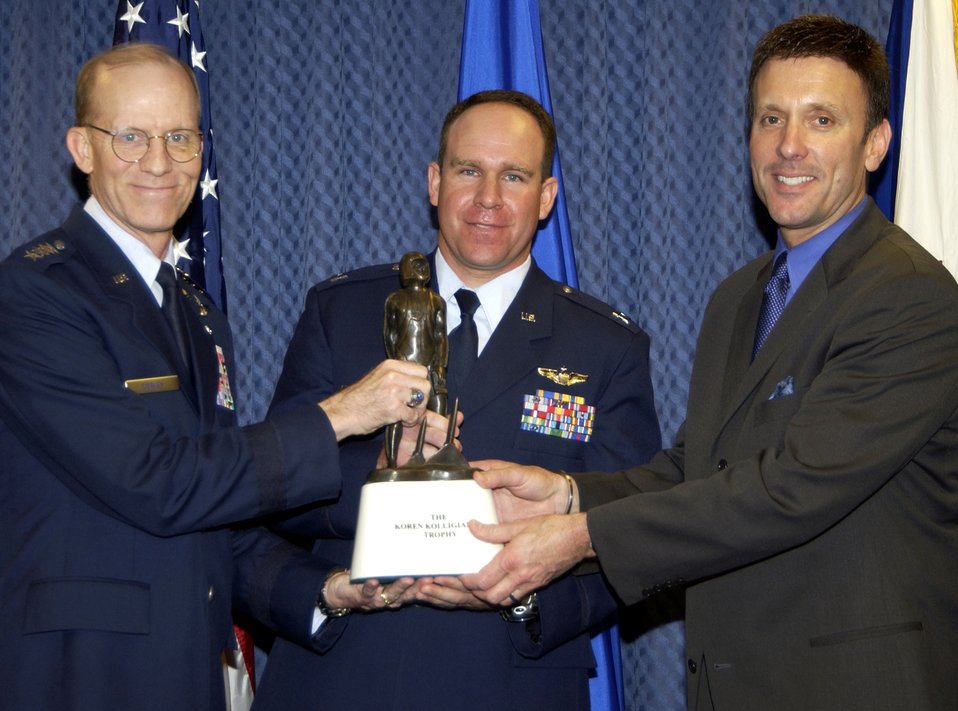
Kolligian Trophy

Air Force Vice Chief of Staff Gen. John D.W. Corley (left) and Koren Kolligian (right) present the Kolligian Trophy to Capt. Andreas Ix during a ceremony in the Pentagon on Friday, May 12, 2006. The trophy, named after 1st Lt. Koren Kolligian Jr., who was declared missing in the line of duty on Sept. 14, 1955, is awarded annually to an aircrew member or to aircrew members who exhibit outstanding feats of airmanship. Capt. Ix earned the award because of his actions after a red-tail hawk struck and damaged the C-17 Globemaster III he was piloting over West Texas on March 10, 2005.